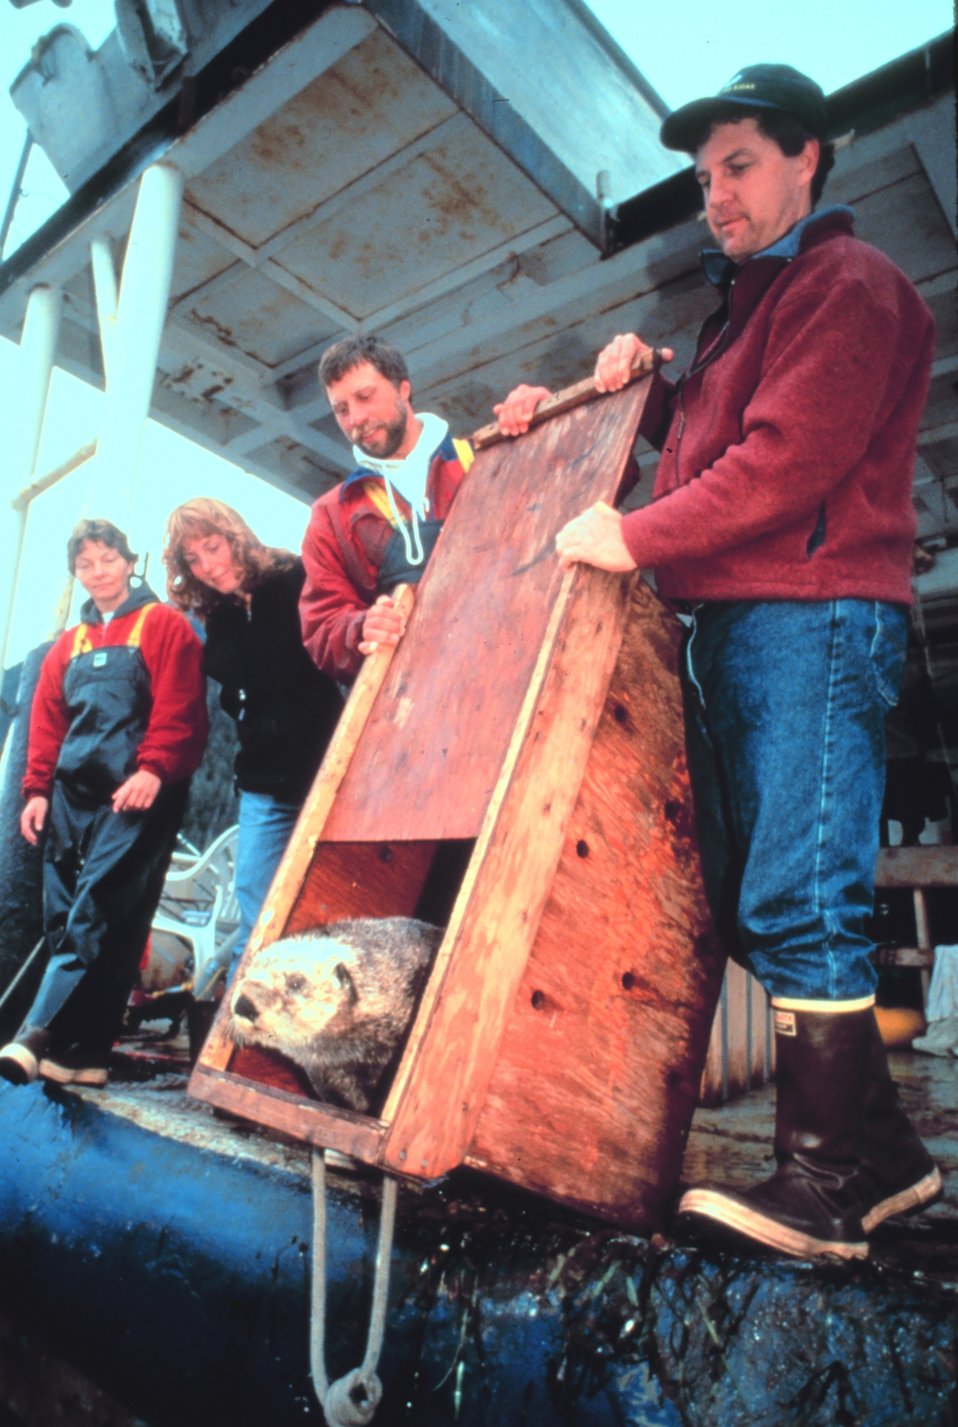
Releasing a cleaned sea otter back to its natural environment